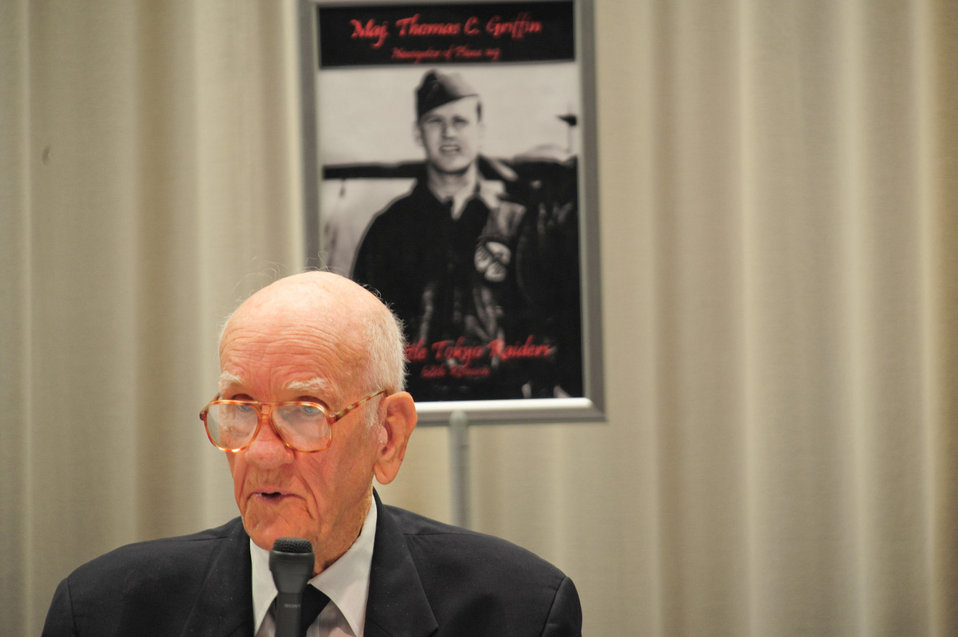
68th Doolittle Raiders Reunion

U.S. Air Force Maj. (ret.) Thomas C. Griffin, navigator of the ninth B-25 Mitchell Bomber that took part in the Doolittle Tokyo Raid, attends a press event at the National Museum of the U.S. Air Force at Wright Patterson Air Force Base, Ohio, April 16, 2010. The Doolittle Raiders' 68th reunion commemorates the anniversary of the Doolittle Tokyo Raid on April 18th, 1942, when U.S. Army Air Forces Lt. Col. Jimmy Doolittle's squad of 16 B-25s bombed targets in response to the Japanese attack on Pearl Harbor.